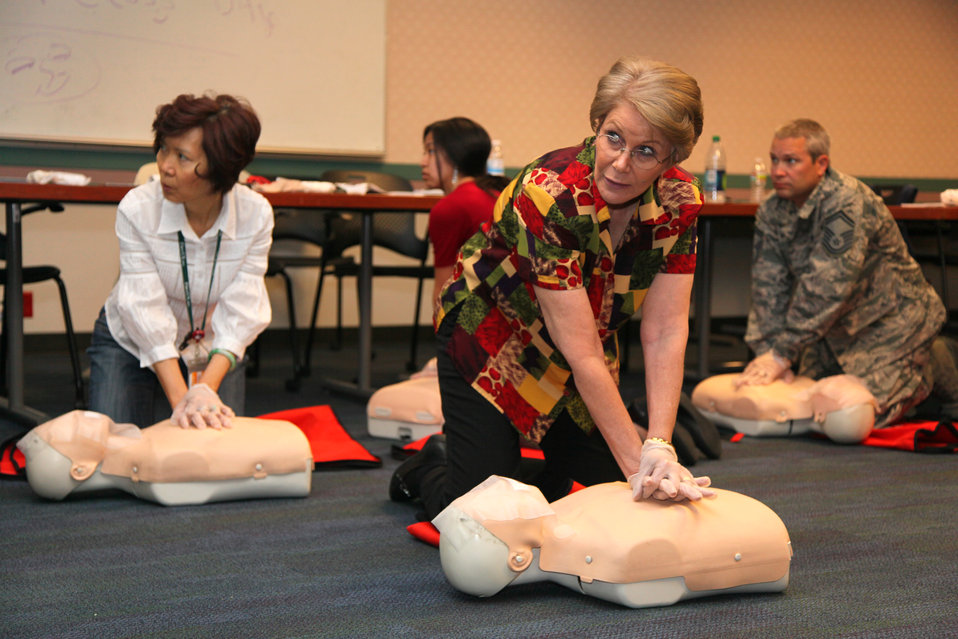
First Aid and CPR training at district headquarters

“Ah, ha, ha, ha, stayin’ alive – stayin’ alive!”

Phyllis Svetich (center) from the U.S. Army Corps of Engineers Sacramento District’s office of counsel, practices life saving compressions on a mannequin during First Aid and CPR training at district headquarters June 28, 2012.

“The safety office is hosting this class to enhance the safety and wellbeing of our employees by having more certified First Aid and CPR personnel in the building and out in the field,” said Curtis Morris district safety specialist.

Achieving the recommended adult compression-rate of around 100 beats per minute can be guided by following along the beat of the Bee Gee’s song, Stayin’ Alive.